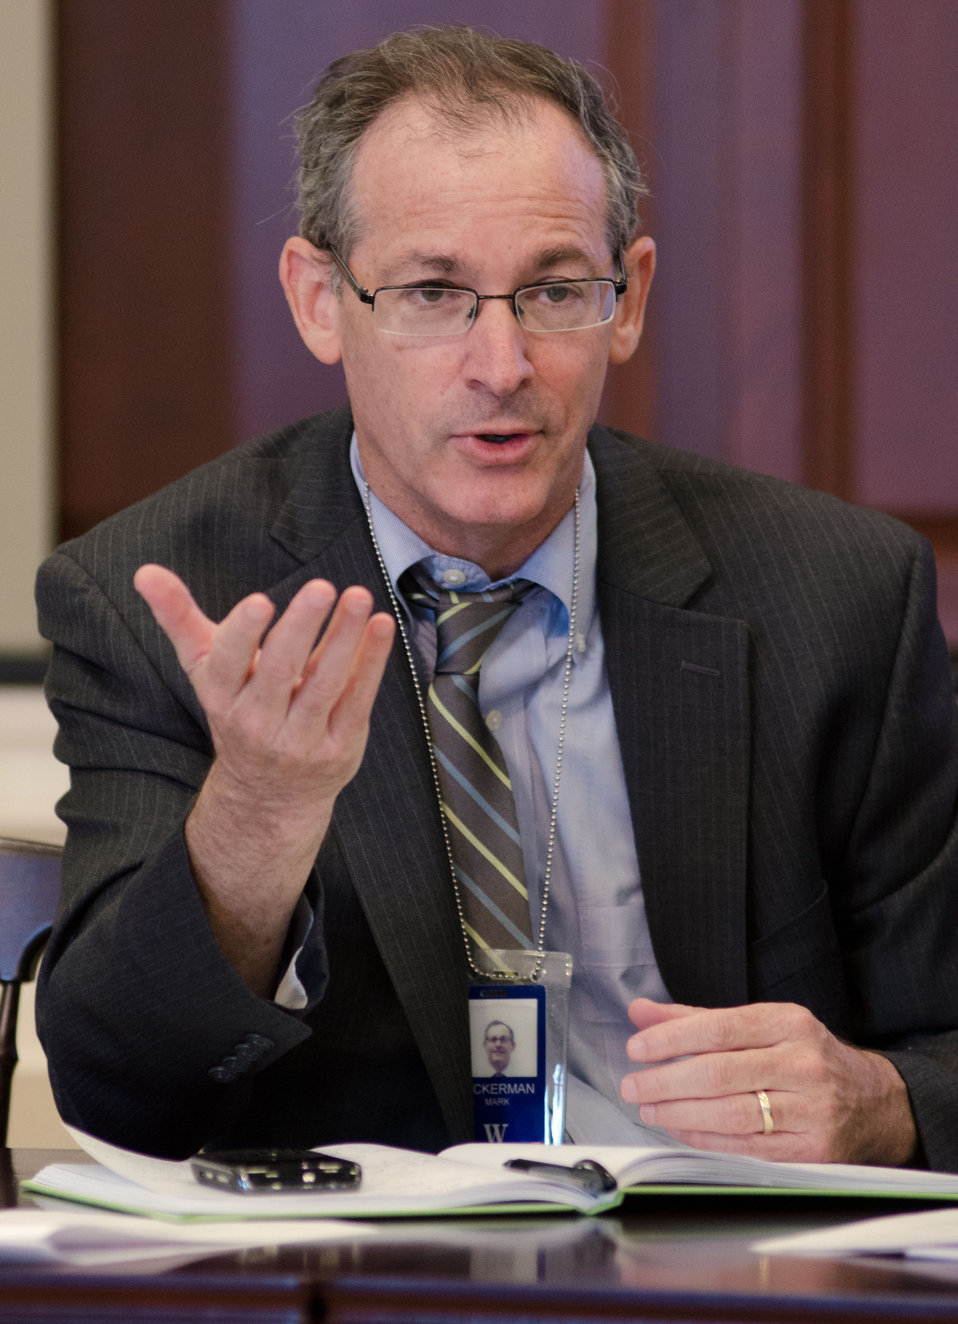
White House Domestic Policy Council Deputy Director Mark Zuckerman brought up several points during the meeting of the White House Rural Council, chaired by Agriculture Secretary Tom Vilsack, at the Executive Office Building in Washington, D.C. on Friday, July 27, 2012 to update members and stakeholders on the Administration response to the drought and explore ways to assist American farmers and ranchers suffering in its affects. Following President Obama’s instructions of using existing programs to support struggling farmers and ranchers the U.S. Department of Agriculture (USDA) has implemented several processes to assist American farmers and ranchers. USDA has streamlined drought disaster declarations directly from Drought Monitor data, allowed nearly 30 million acres under the Conservation Reserve Program (CRP) to be used for emergency haying or grazing, lowered payment reduction for CRP lands that qualify for emergency haying and grazing in 2012, from 25% to 10%, allowed producers to modify current Environmental Quality Incentives Program (EQIP) contracts to allow for grazing, livestock watering and other conservation activities to address drought conditions, and has authorized haying and grazing of Wetlands Reserve Program (WRP) easement area in drought-affected areas where haying and grazing is consistent with conservation of wildlife habitat and wetlands, and reduced the interest rate for Farm Service Agency (FSA) Emergency loans from 3.75% to 2.25%.